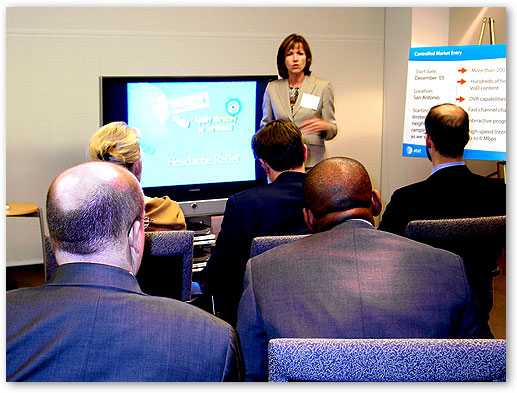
Ms. Lea Ann Champion, Senior Executive Vice President, IP Operations, AT&T, gives demonstration over IP-Video Technology, Irving, Texas.